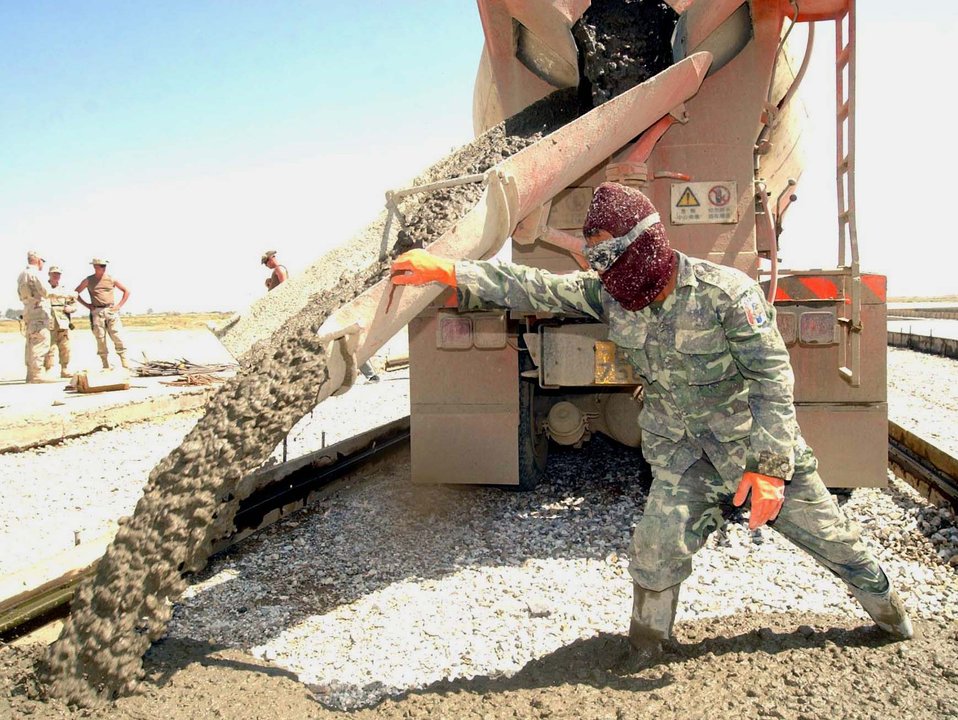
Deep in the mix

BAGRAM AIR BASE, Afghanistan -- A member from the Thai military pours concrete into a form for the reconstruction of the runway here. The project is funded by the Army and coordinated by the 455th Civil Engineer Squadron.